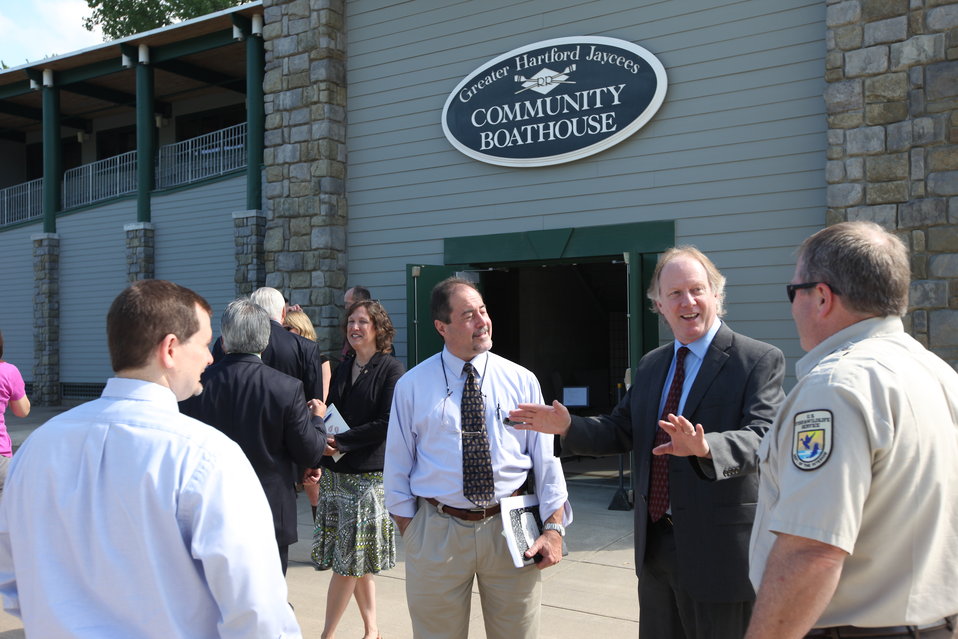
Stakeholders outside

Connecticut River watershed stakeholders and conservation partners speak with Silvio O. Conte National Fish & Wildlife Refuge Manager Andrew French outside the Hartford Riverfront Boathouse.